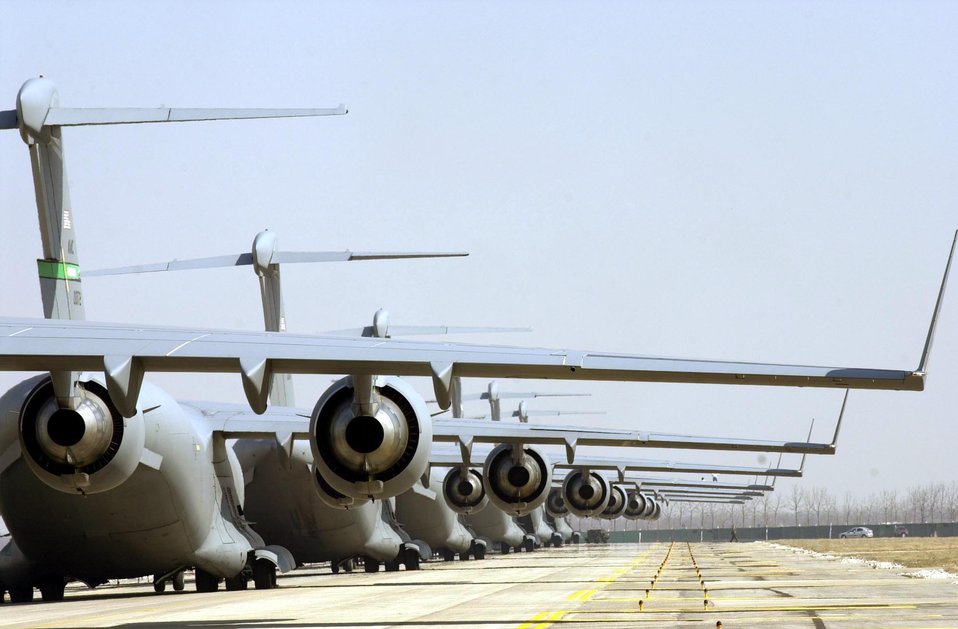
C-17s ready for takeoff

C-17 Globemaster IIIs await orders to load and launch in support of Operation Iraqi Freedom at a forward-deployed location.